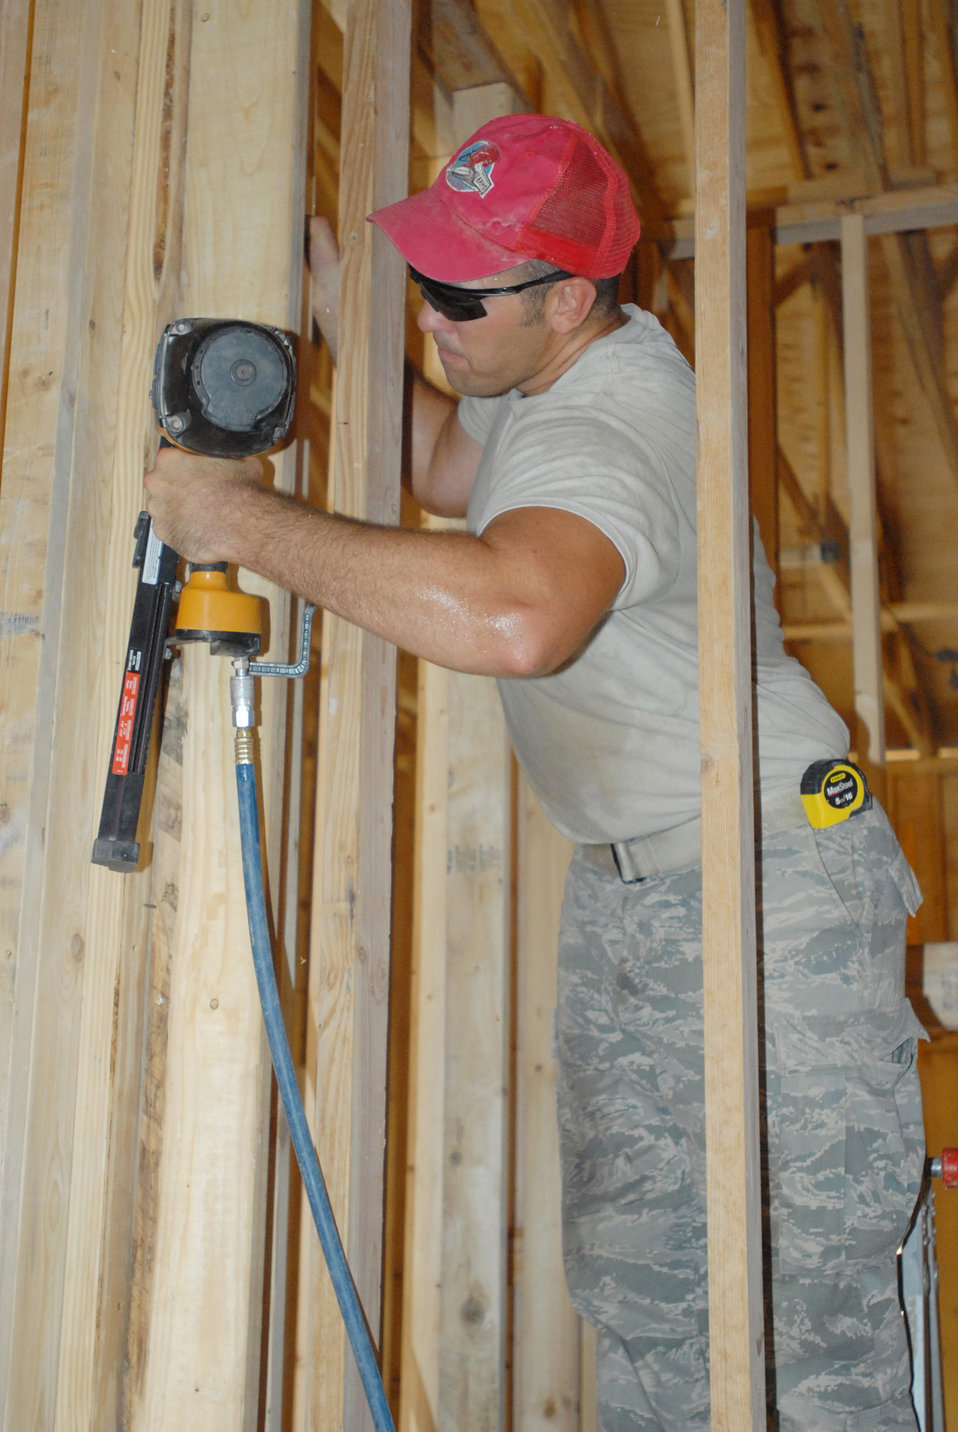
Airmen improve base in Iraq

Staff Sgt. Jeffrey Ratliff operates a nail gun during a construction project to build a new hall for the Red Bull Band in June at Contingency Operating Base Basra, Iraq. Sergeant Ratliff is assigned to the 557th Expeditionary RED HORSE Squadron.